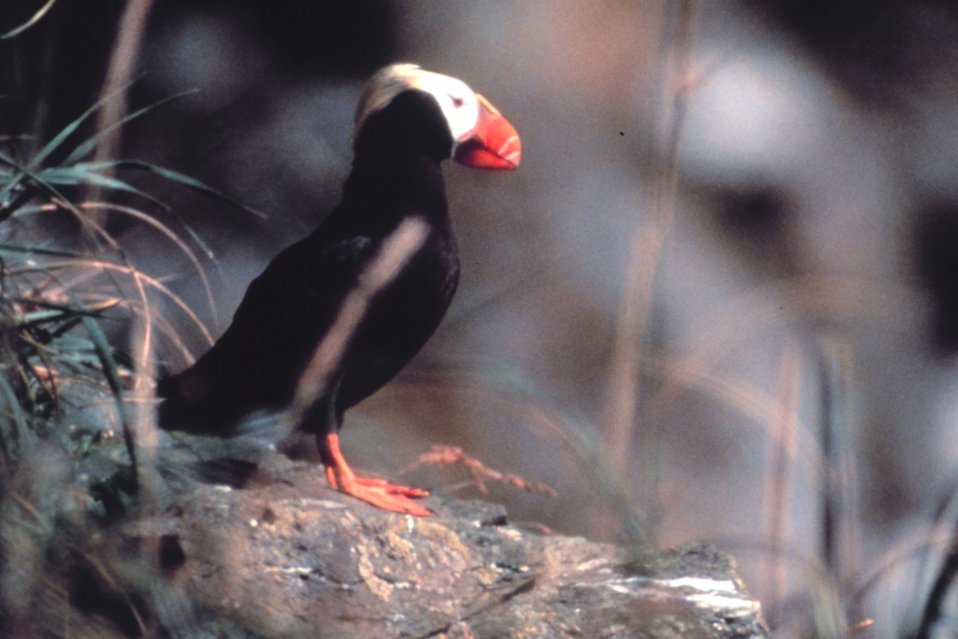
Tufted puffin